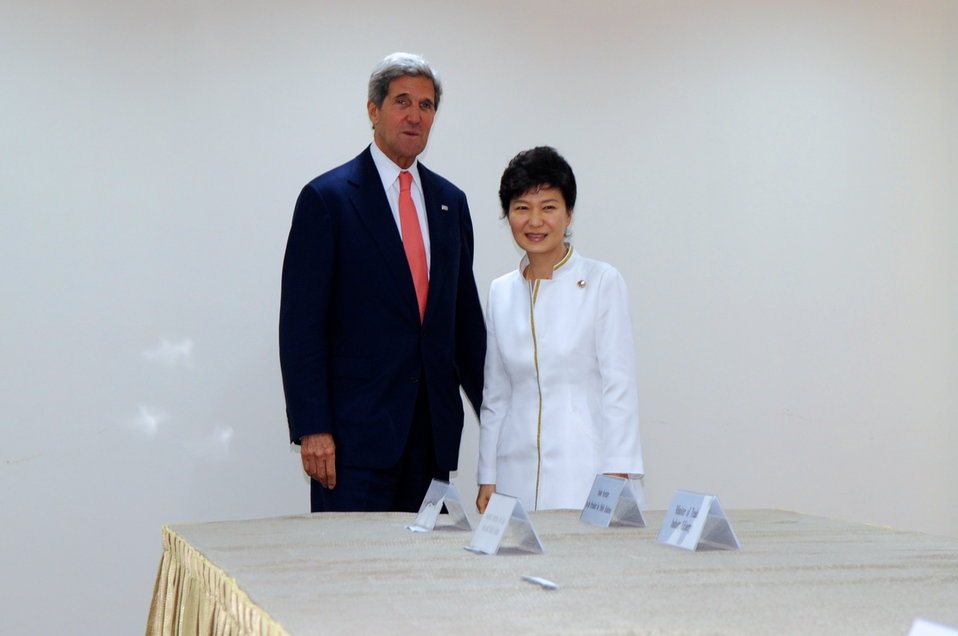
Secretary Kerry Meets With Republic of Korea President Park

U.S. Secretary of State John Kerry poses with President Park Geun-hye of the Republic of Korea before a bilateral meeting on the margins of the East Asia Summit in Bandar Seri Begawan, Brunei, on October 10, 2013.